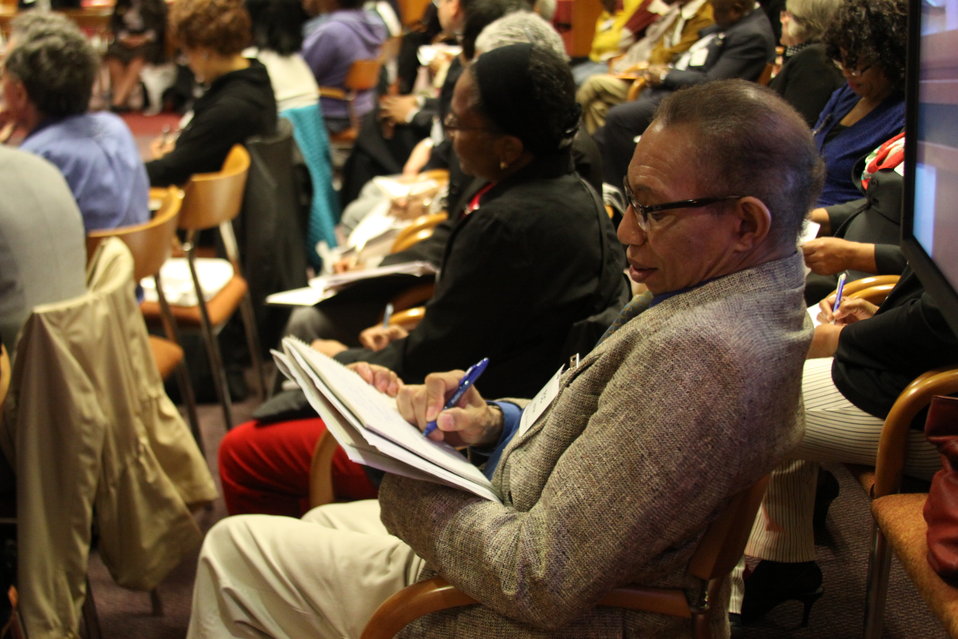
Digital Literacy for Seniors: How the Internet Can Benefit Older Americans, April 24, 2013